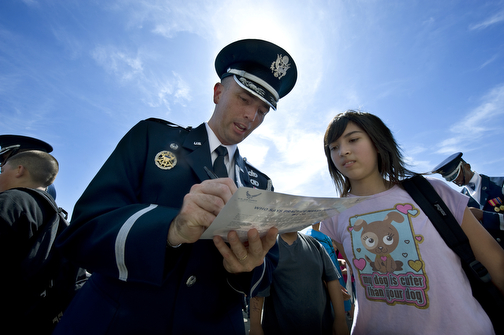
Air Force Week-Sacramento

Lt. Col. Ray Powell signs autographs after a performance by the drill team during a visit to Rosa Parks Middle School in Sacramento, Calif., Sept. 10, 2009, for Air Force Week-Sacramento. Colonel Powell was a student of Rosa Parks Middle School from 1979-1981. Air Force Week-Sacramento is an event using various activities and exhibitions to educate the community about the Air Force's capabilities and missions. Colonel Powell is commander of the United States Air Force Honor Guard.